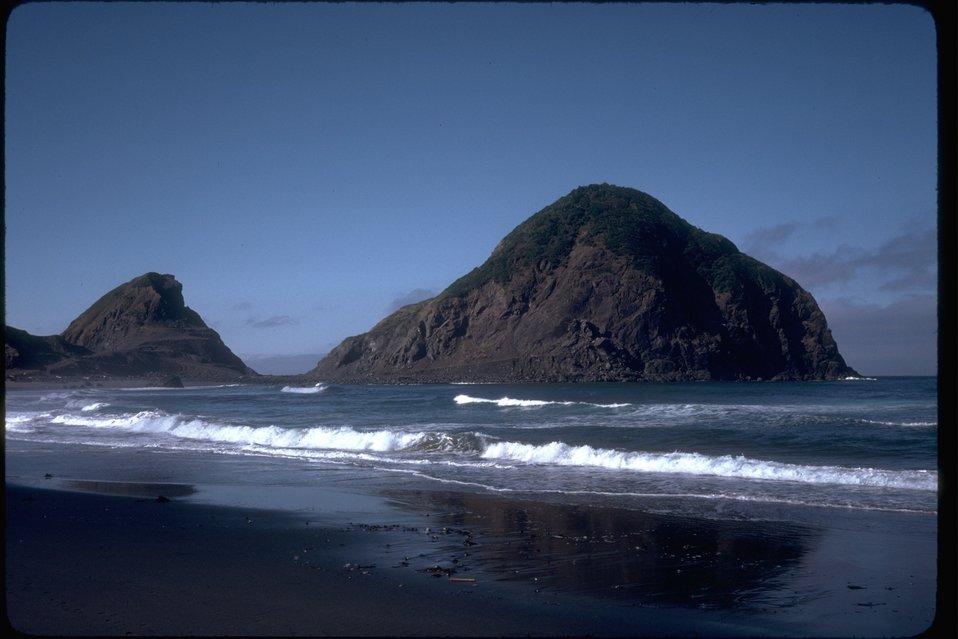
North Sisters Rock Wilderness Study Area. OR 12-8